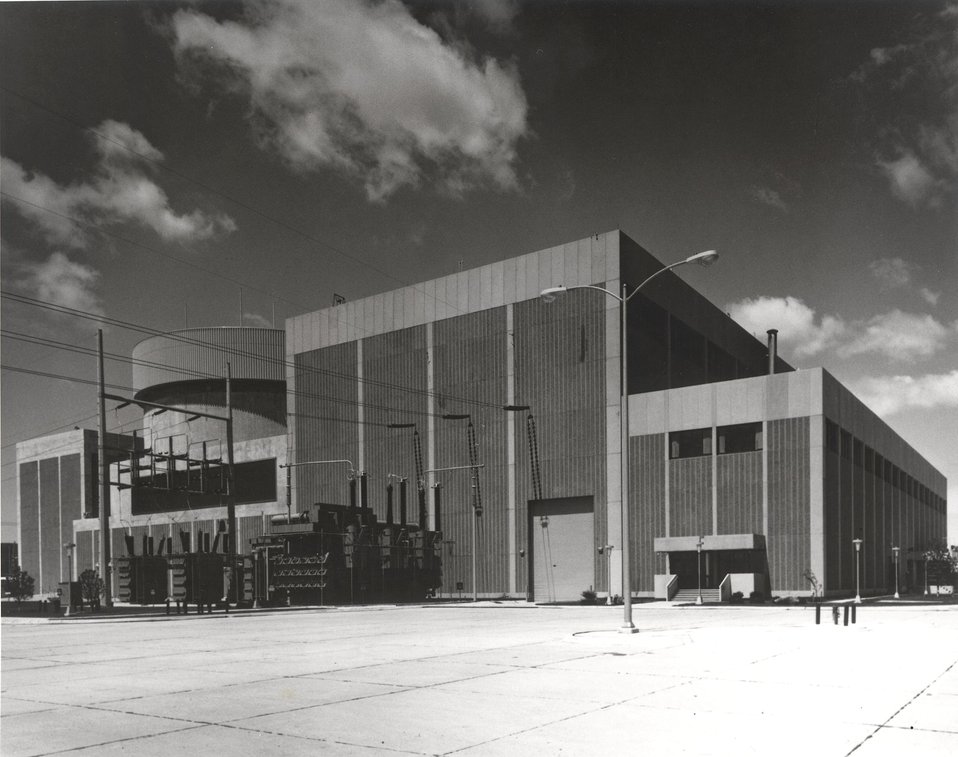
The Omaha Public Power District Fort Calhoun Nuclear Power Station located at Fort Calhoun, Nebraska. Circa 1974.